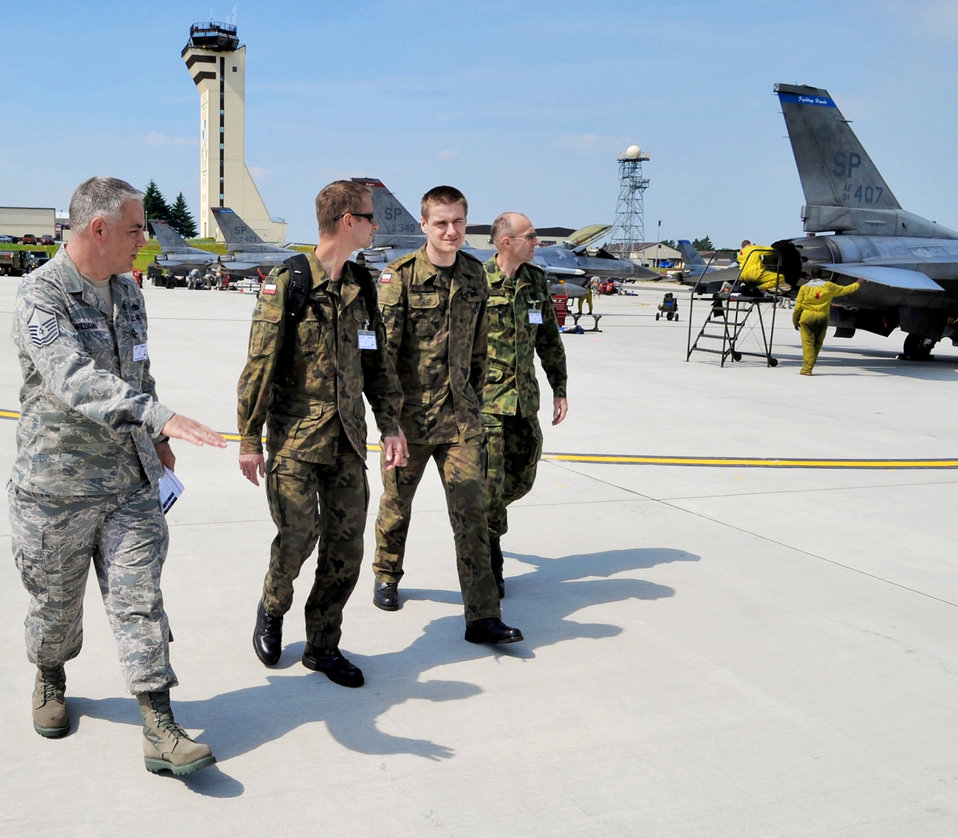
Polish team observes inspection

(From left) Master Sgt. Jason Williams leads a flightline tour for Polish air force members Lt. Mariusz Choszczewski, Capt. Chris Marciak, and Maj. Andriej Pokladek during a U.S. Air Forces in Europe Operational Readiness Inspection June 23, 2010 at Spangdahlem Air Base, Germany. Sergeant Williams is the 31st Maintenance Group readiness superintendent at Aviano Air Base, Italy and the Polish airmen are assigned to the 32nd Air Tactical Base, Poland.